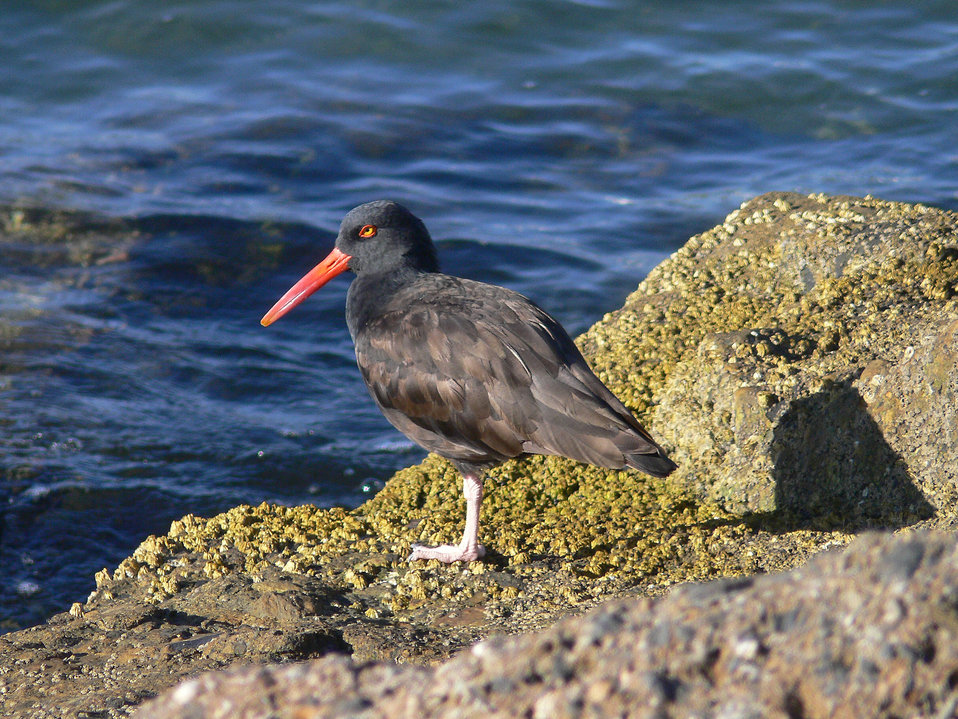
Black oystercatcher

A black oystercatcher standing on a large rock overlooking the water.